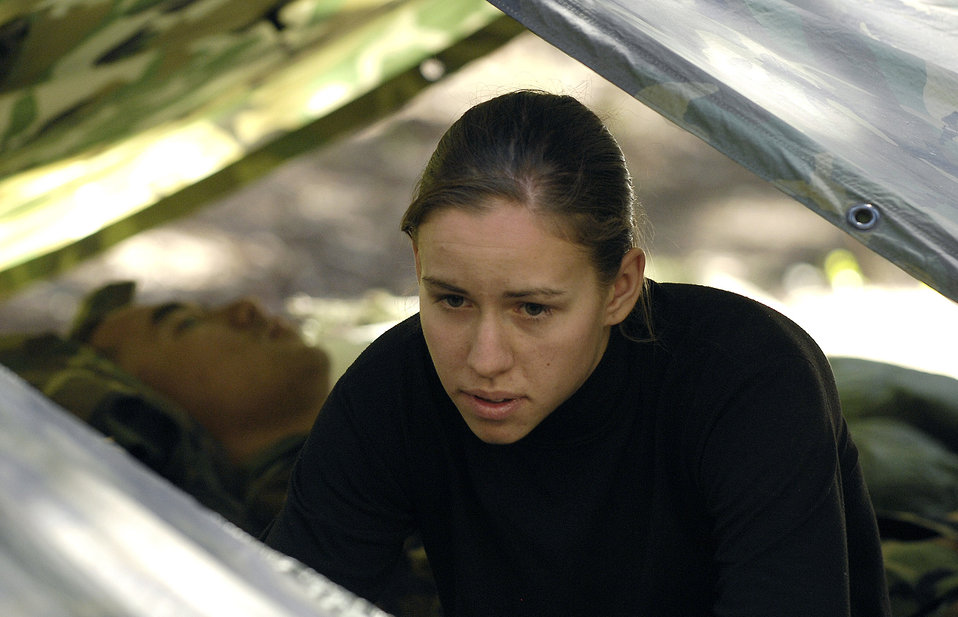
Cadets train in survival, evasion, resistance, escape

Air Force Academy Cadet 2nd Class Abigal Nickels arranges her shelter prior to bedding down for the night June 9 at Saylor Park in Colo. More than 600 cadets are being trained as instructors in survival, evasion, resistance and escape tactics during the 2008 summer period.